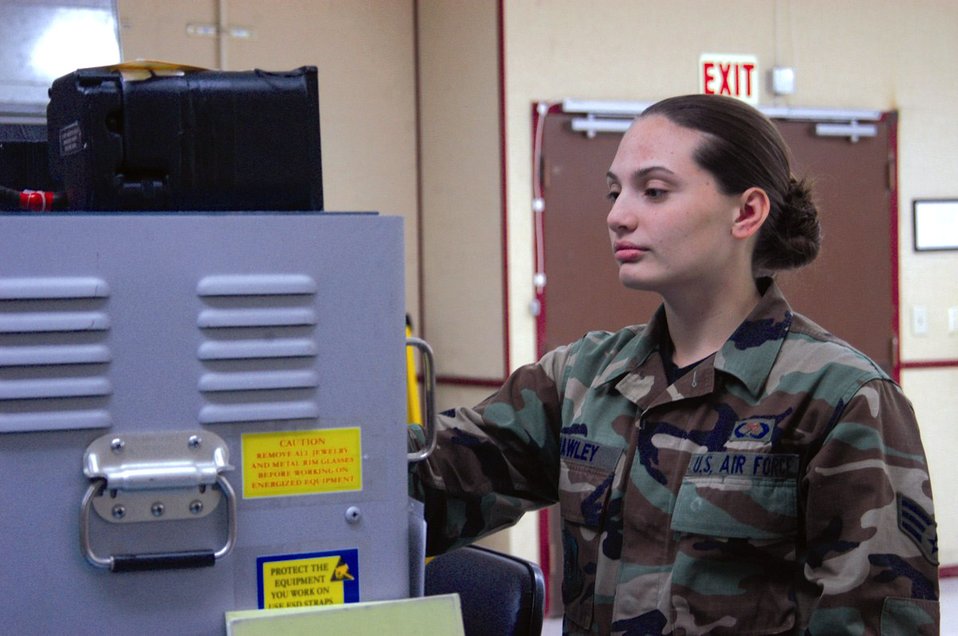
Airman gets CCAF at 19

Senior Airman Sharon Howley, an integrated avionics mechanic, works with the T-38 flight director system test set. At age 19, Airman Howley is the youngest of more than 9,100 graduates earning their degrees in the October class of the Community College of the Air Force. She is also one of the youngest Airmen to earn a degree in the CCAF's 32-year history. Airman Howley is assigned to the 412th Maintenance Squadron at Edwards Air Force Base, Calif.